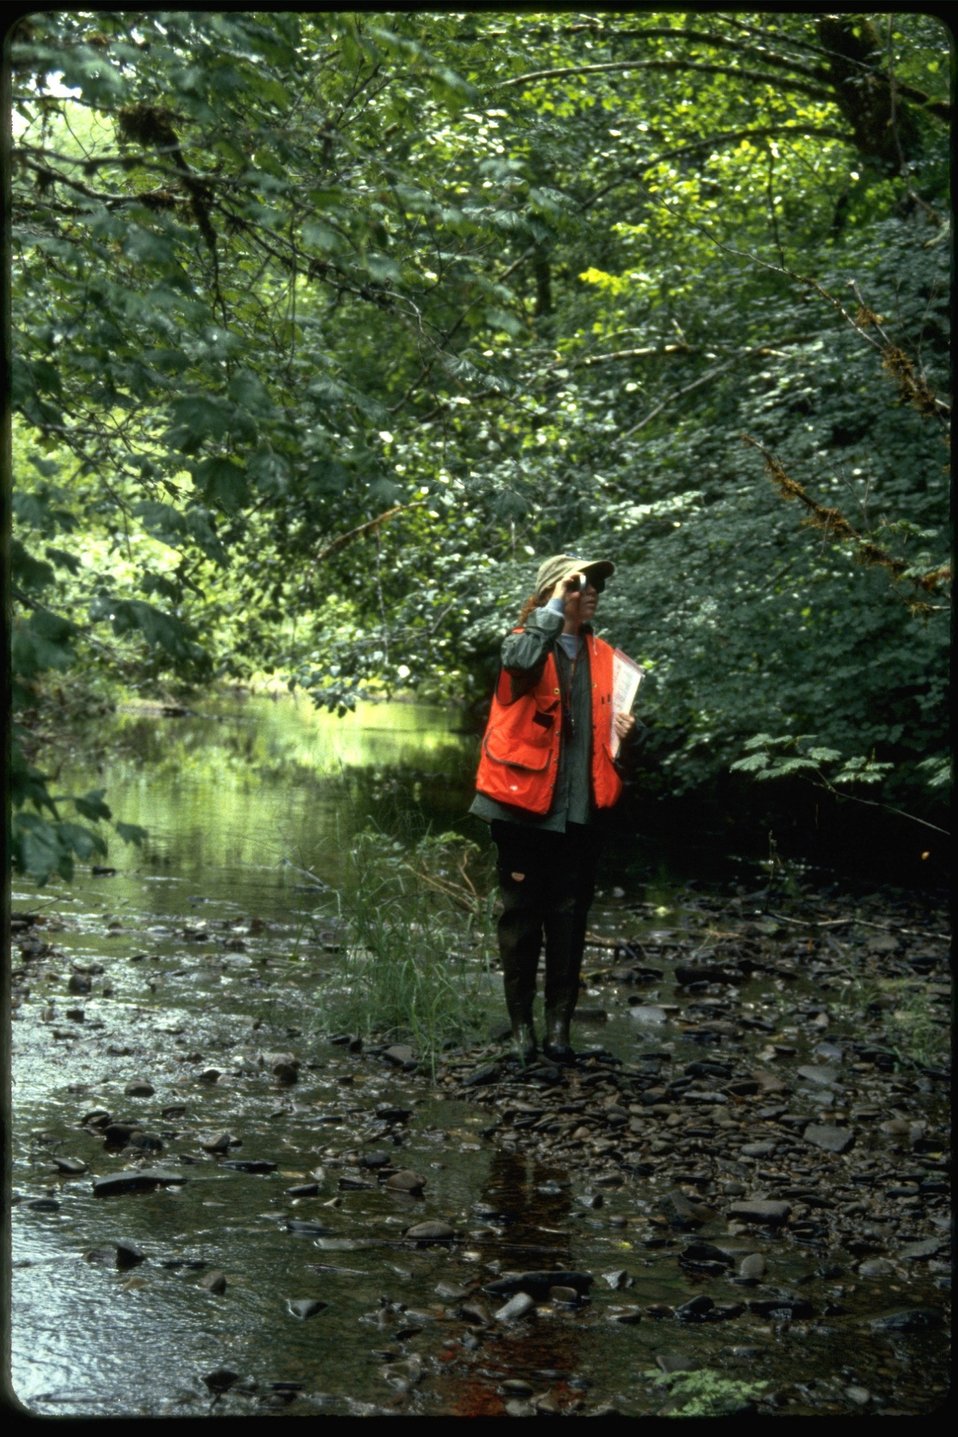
Sarah surveying Smith Creek during habitat study.